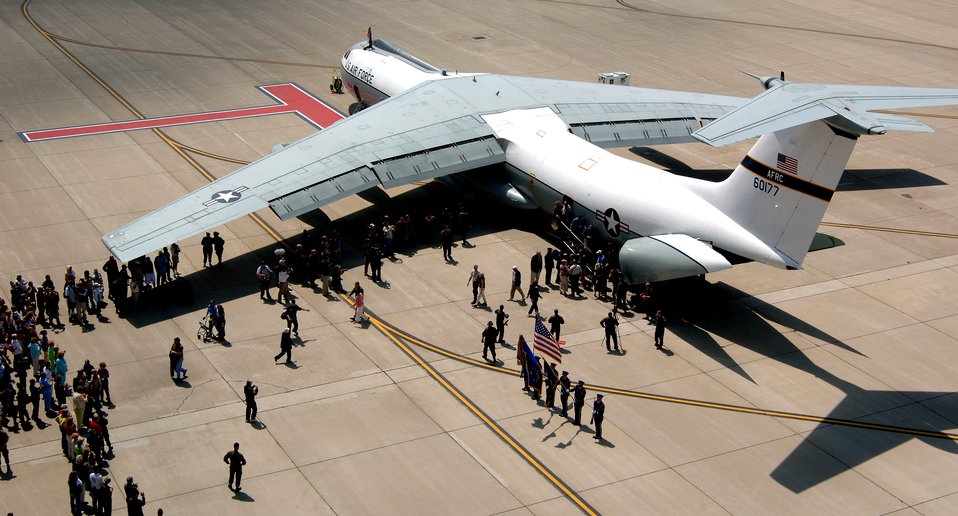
C-141 'Hanoi Taxi' now on display at museum

Families swarm to greet former prisoners of war moments after they landed in the C-141